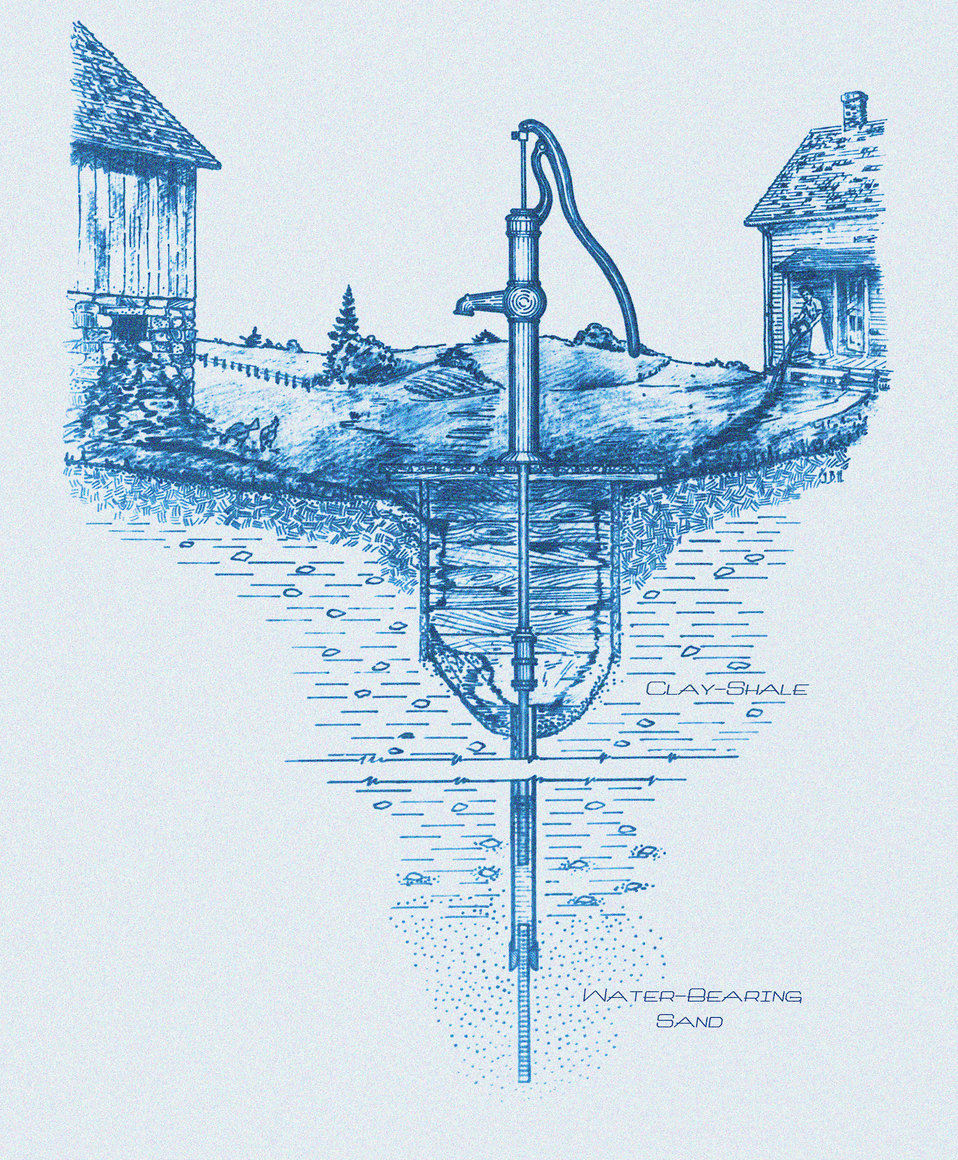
This historic diagram, which had been digitally enhanced and colorized, depicted an improperly located, and poorly constructed 'drilled' type well, and showed how the water supply would almost certainly be contaminated. Sources of contaminants included a barn and home. Note the woman dumping liquid waste from her front porch at right. Published in 1915, this was one of a series of instructional drawings used by the Minnesota Board of Health to train state public health workers.